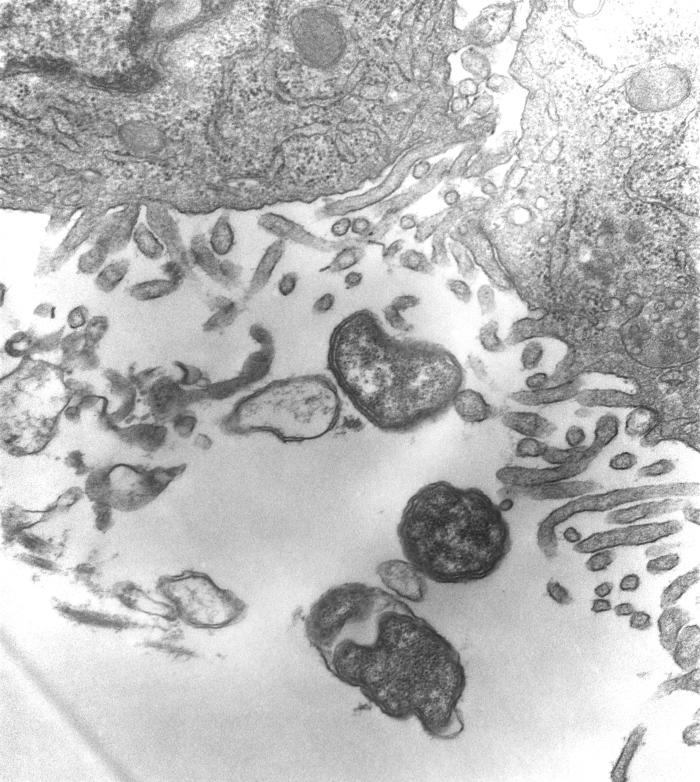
This 1976 transmission electron micrograph (TEM) depicted peritoneal mesothelial cells from a mouse that had been experimentally infected intraperitoneally with Orientia tsutsugamushi rickettsial micro-organisms. This TEM revealed that the extracellular organisms were covered with a distinct third outer membrane of probable host cell origin.